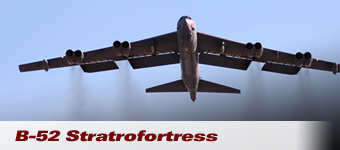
B-52 Stratofortress takes off from Barksdale Air Force Base.